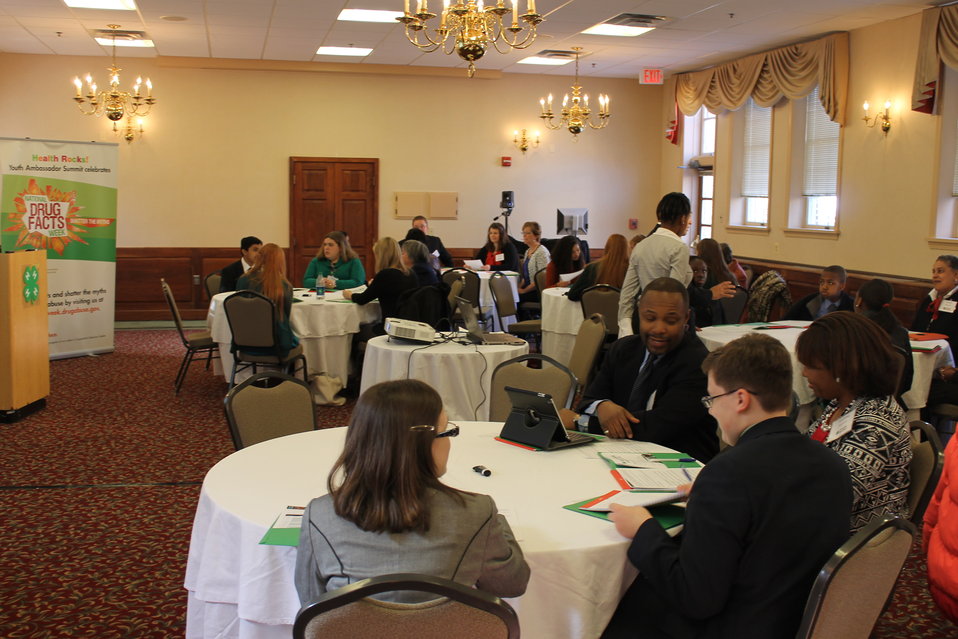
4-H Event

National 4-H Council Hosts Youth Summit to Celebrate National Drug Facts Week